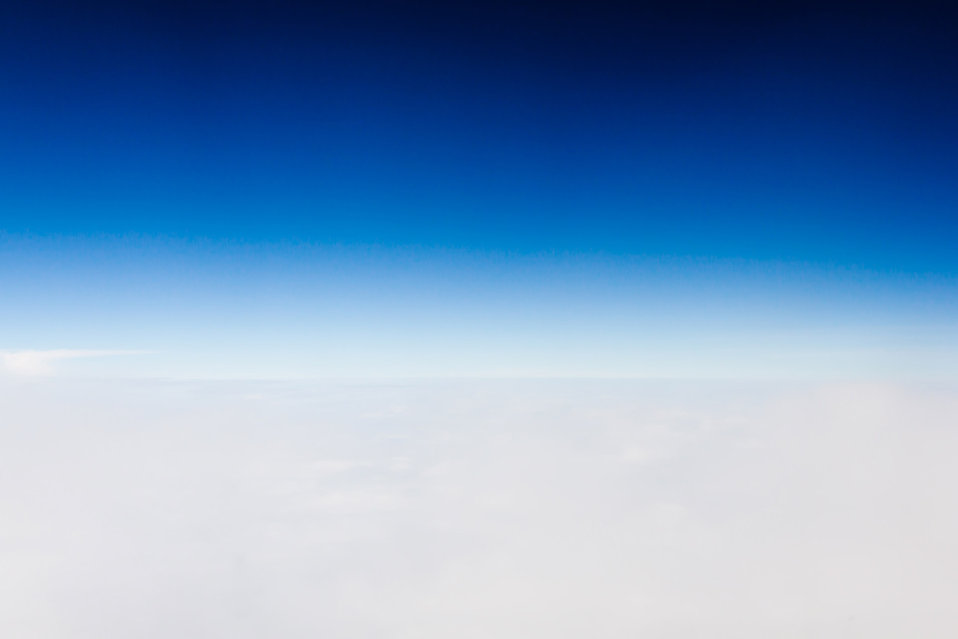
Above the clouds

Dark blue sky above white clouds.